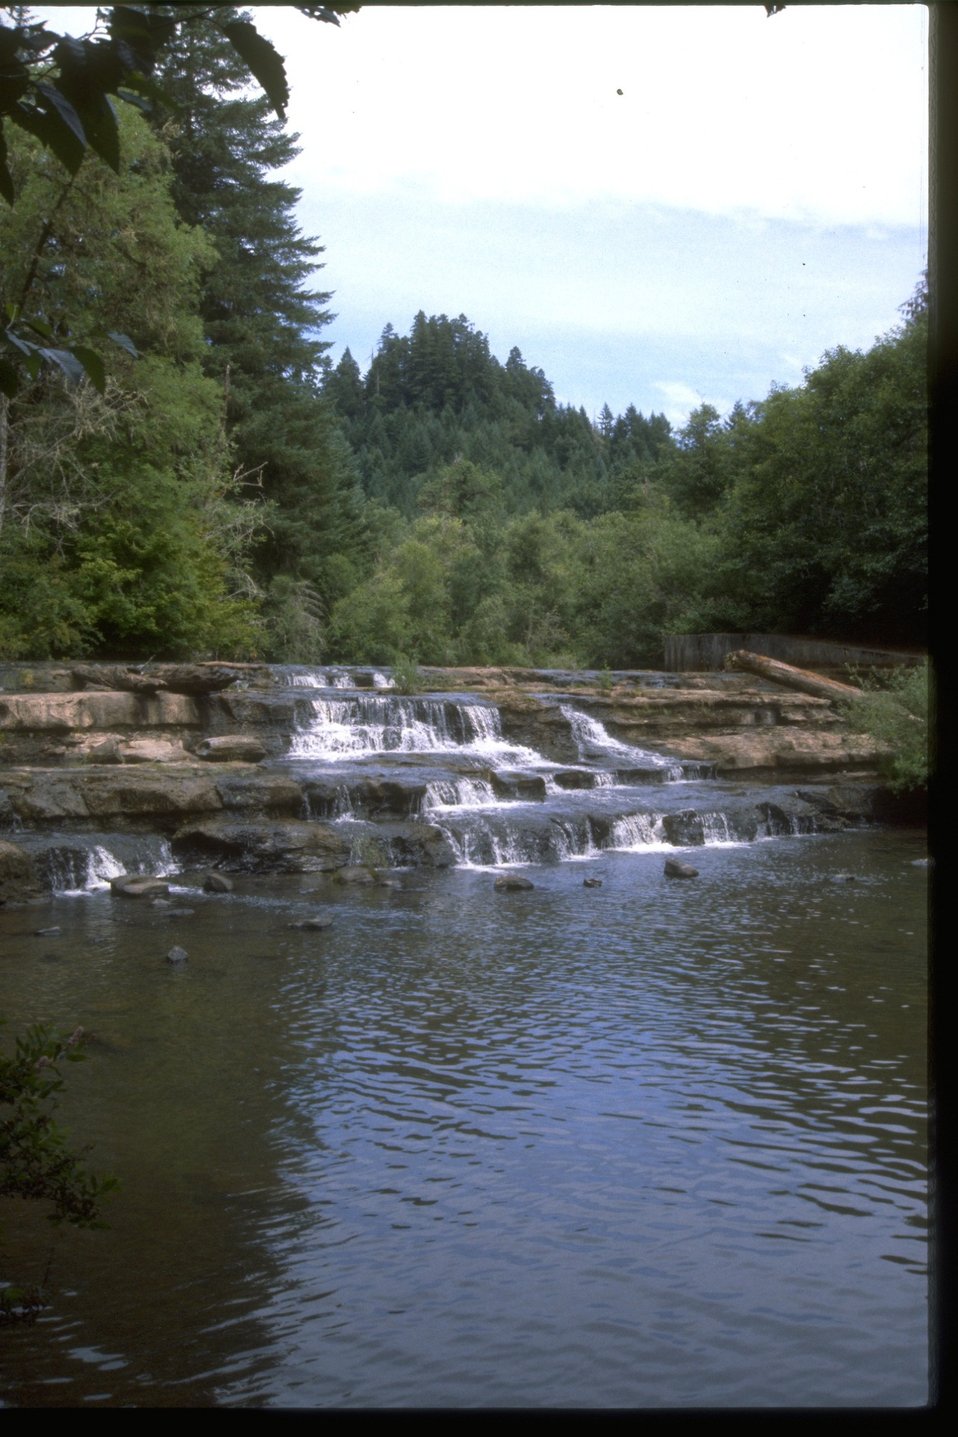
View of Siuslaw Falls